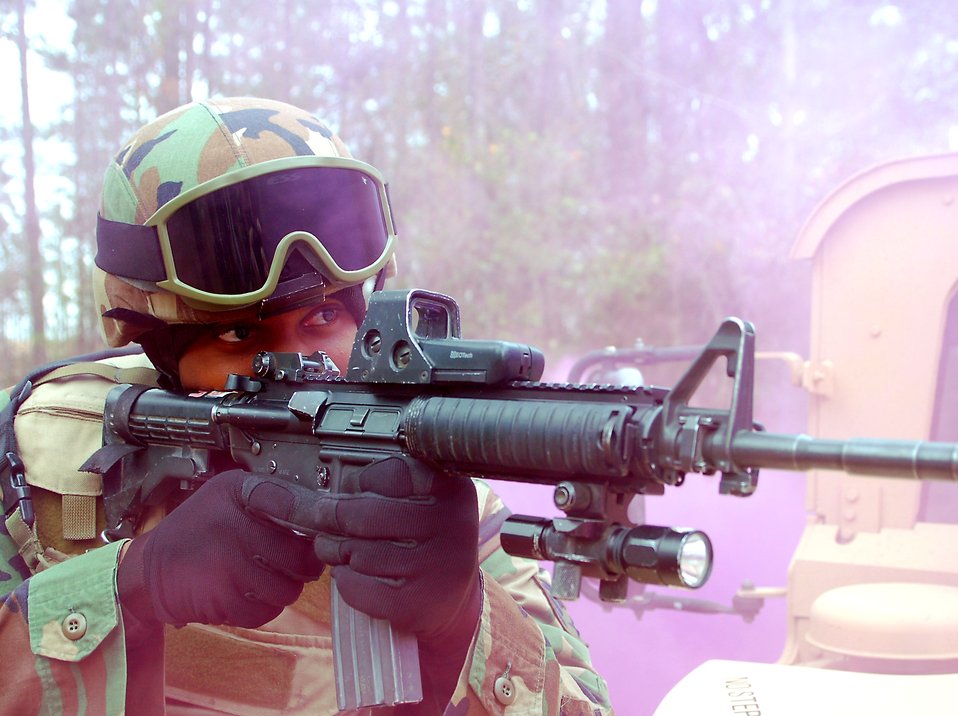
Eyes on the enemy

Senior Airman David Santee guards the perimeter of a casualty collection point during a combat medical skills exercise Jan 19 at Moody Air Force Base, Ga. Airman Santee is an 823rd Security Forces Squadron fire team member.